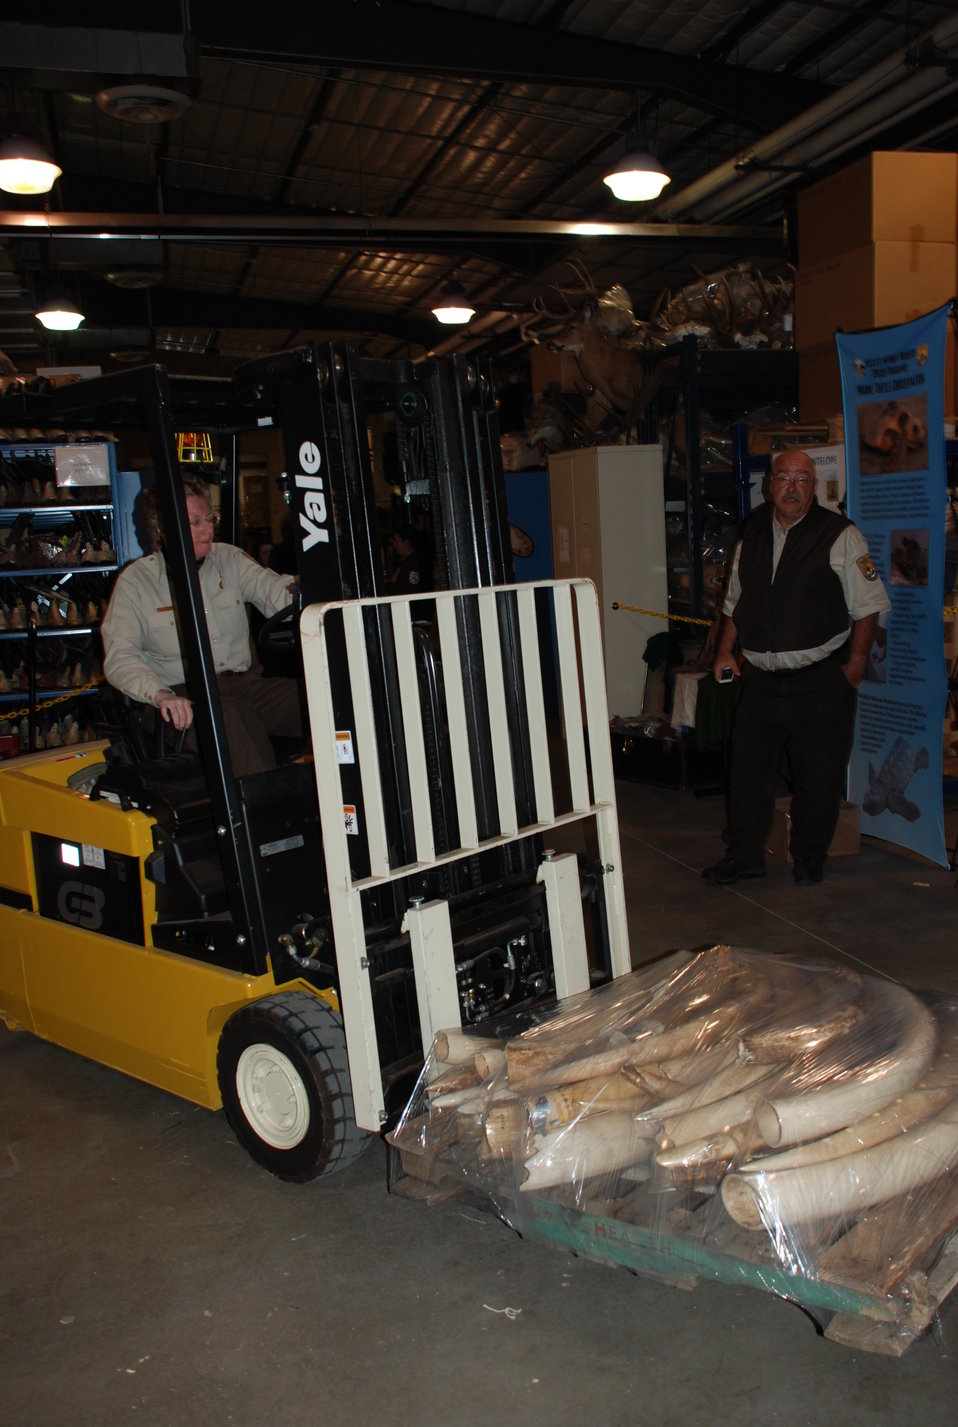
Before sunrise crews began loading ivory which FWS seized during undercover investigations of organized smuggling operations or confiscating at the U.S. border over the past 25 years.